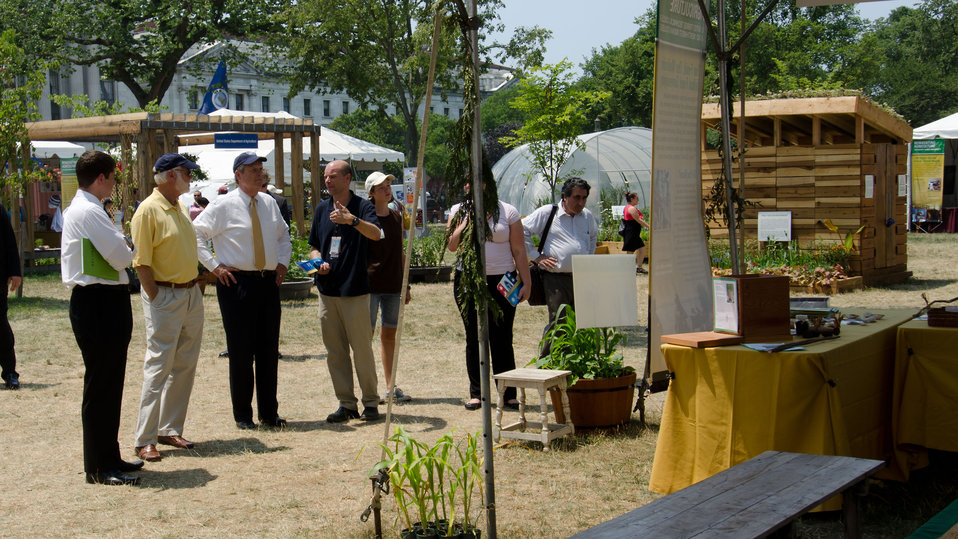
Smithsonian Institution’s Stephen Kidd, dark blue shirt, talks to Agriculture Secretary Tom Vilsack, white shirt and blue cap, talks about the exgibition tent of the 1994 Tribal Colleges in the Campus and Community themed section of the 2012 Smithsonian Folklife Festival, on the National Mall in Washington, D.C. on Friday, June 29, 2012 Near by is the Mississippi State University Mobile Veterinary Clinic that serves the Northern Mississippi area by providing Spay and neuter services to those in need, and provides medical experience for students. One of the three themes this year is “Campus and Community.” It celebrates the 150 years of the USDA and the Land-Grant University System. The U.S. Department of Agriculture (USDA) and the Land-Grant system extend education across the country, contributing to American agriculture success and rural prosperity. “Campus and Community” has demonstrations, discussions, hands-on activities, and entertainment to that showcase the many ways that this partnership works to improve American agriculture and rural life.